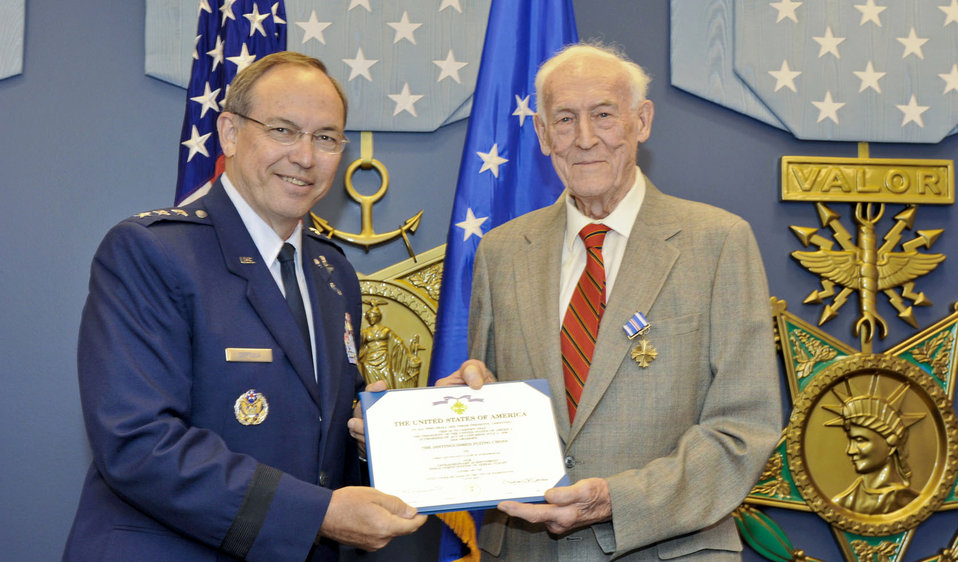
World War II veteran receives Distinguished Flying Cross in Pentagon ceremony

Retired Col. Claude M. Schonberger poses with Lt. Gen. David A. Deptula July 19, 2010, in the Pentagon's Hall of Heroes after being presented with the Distinguished Flying Cross. General Deptula is the deputy chief of staff for intelligence, surveillance and reconnaissance at Headquarters Air Force.